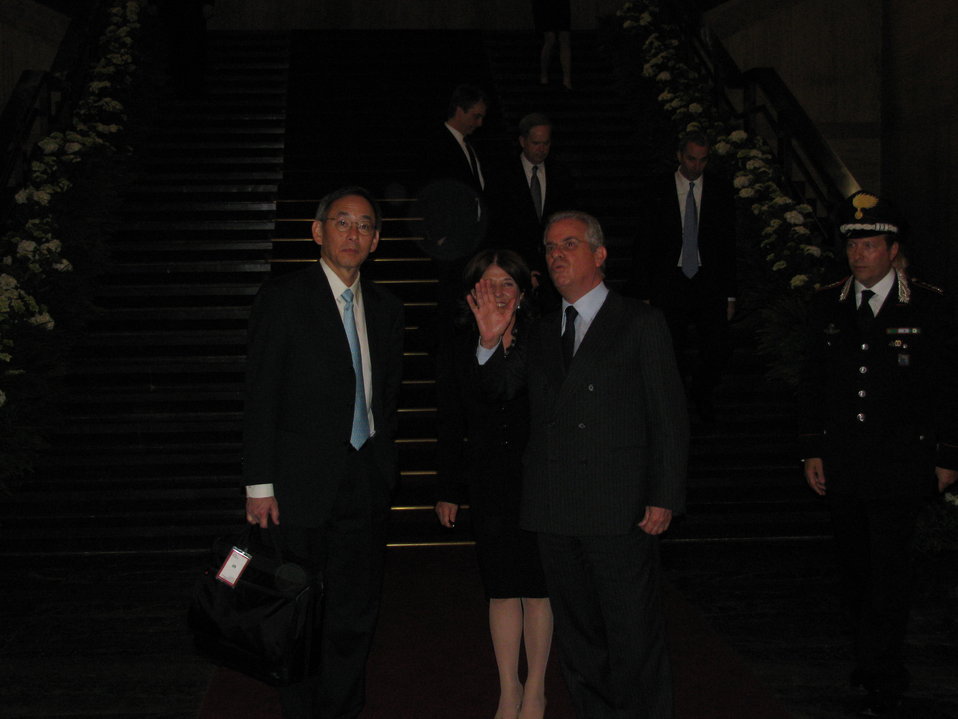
On steps with Italian Energy Minister 2